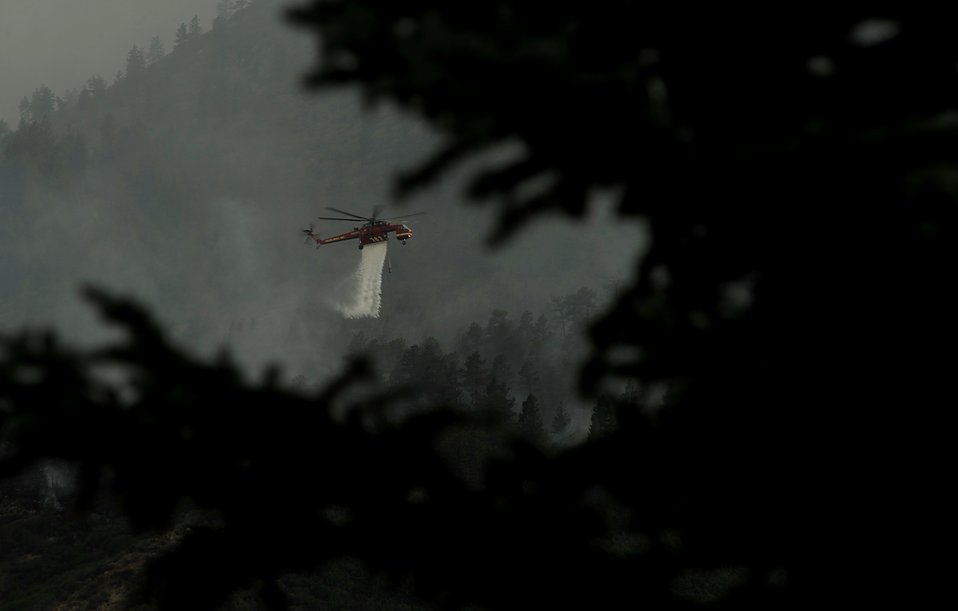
Waldo Canyon Fires

A helicopter drops water on the fire as firefighters continued to battle the blaze that burned into the evening hours in Waldo Canyon on the U.S. Air Force Academy June 27, 2012.